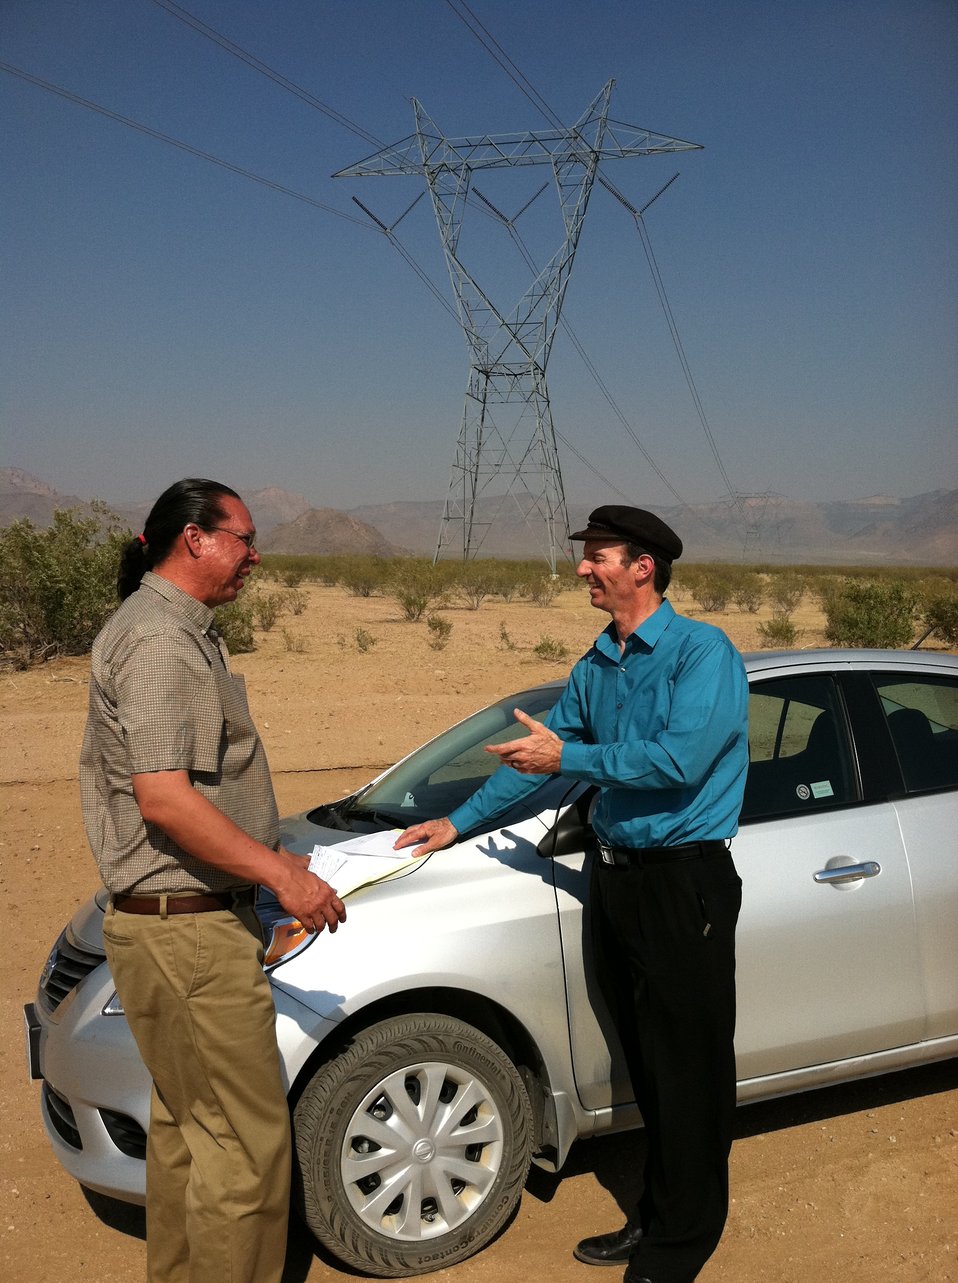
Hualapai Tribe Planning

April 23, 2012 - Paul Dearhouse of NREL and Kevin Davidson of the Hualapai Tribe Planning and Economic Development Department discuss utility scale solar and wind project potential during a START site visit in Arizona.